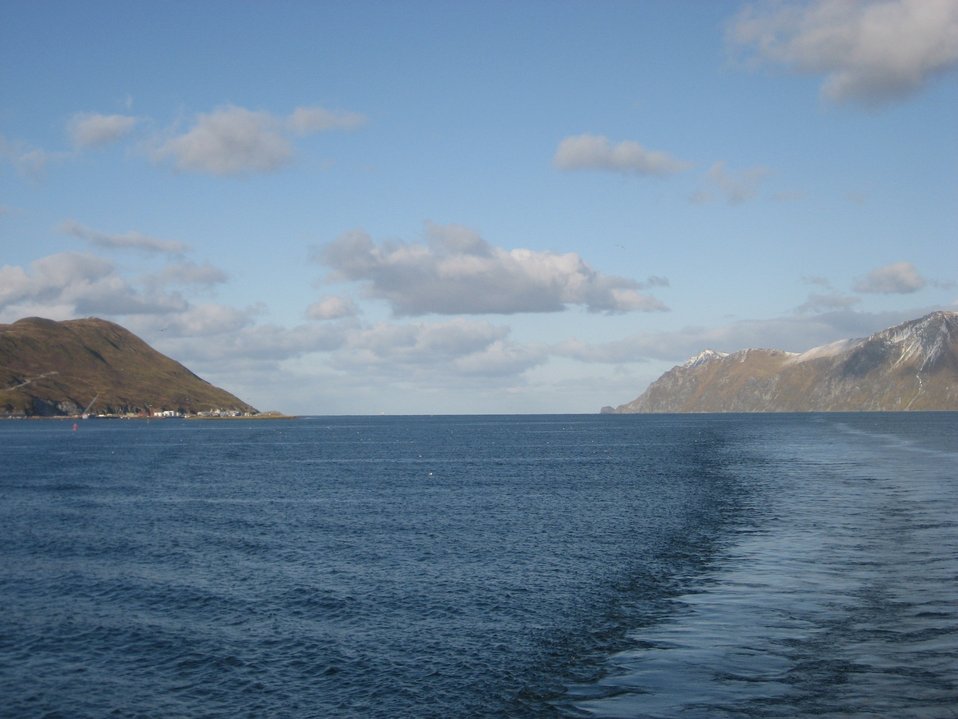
Looking back to the open sea while entering Dutch Harbor.